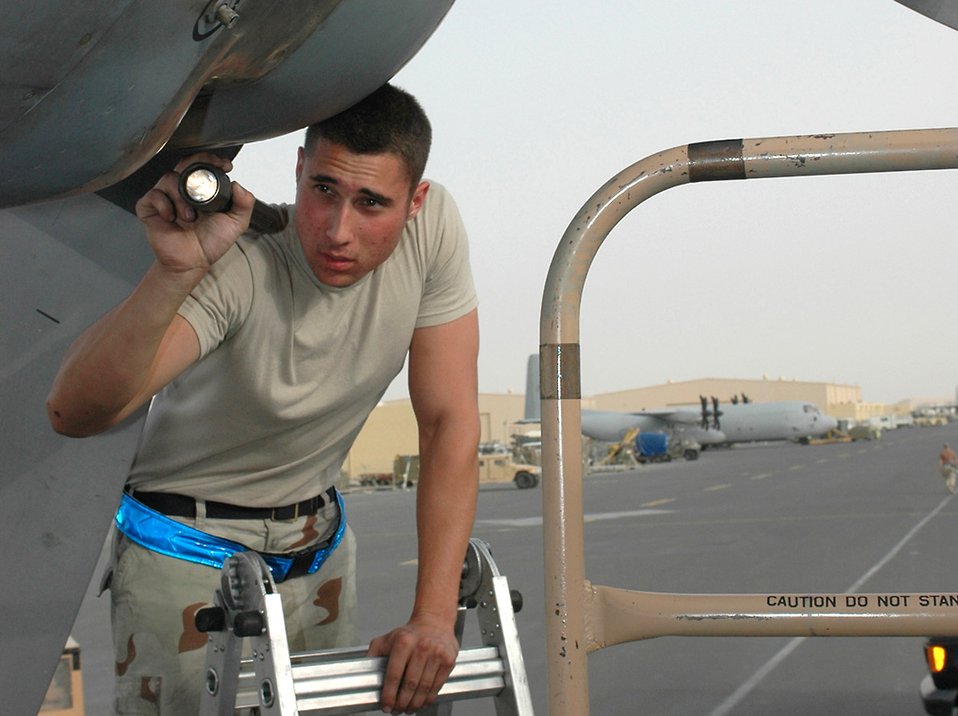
May 1 airpower summary: Airmen support air operations

Senior Airman Michael Sevilla performs a post-flight inspection on a C-130 Hercules in Southwest Asia. C-130 crews from the United States, Australia, Canada and Iraq support airlift and passenger movement requirements in both Iraq and Afghanistan every day. Airman Sevilla is a 379th Expeditionary Aircraft Maintenance Squadron crew chief.